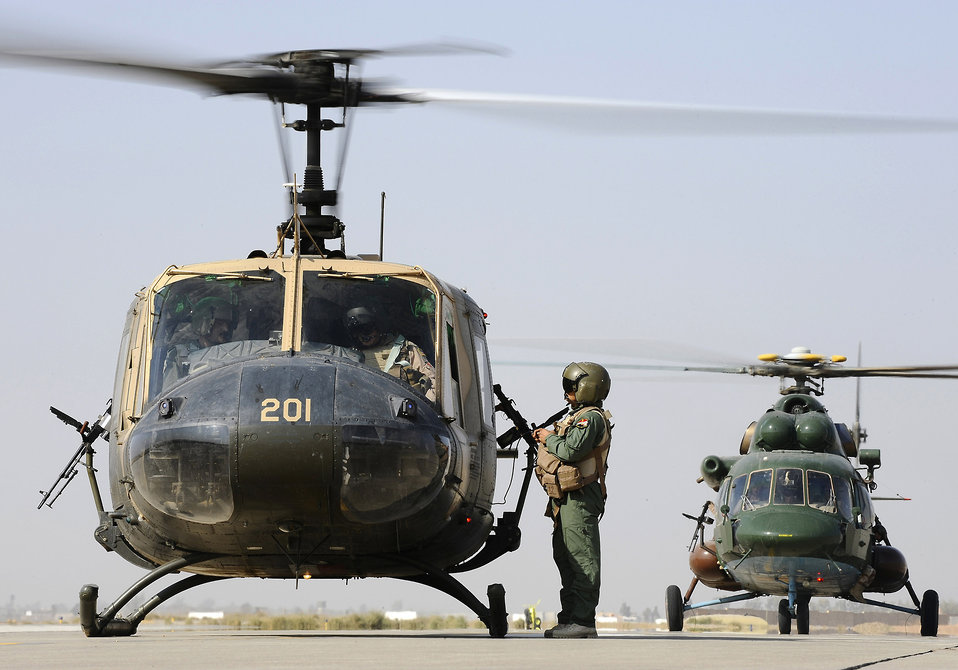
Iraqi air force carries wounded warrior on aeromedical evacuation mission

An Iraqi UH-1H Iroquois